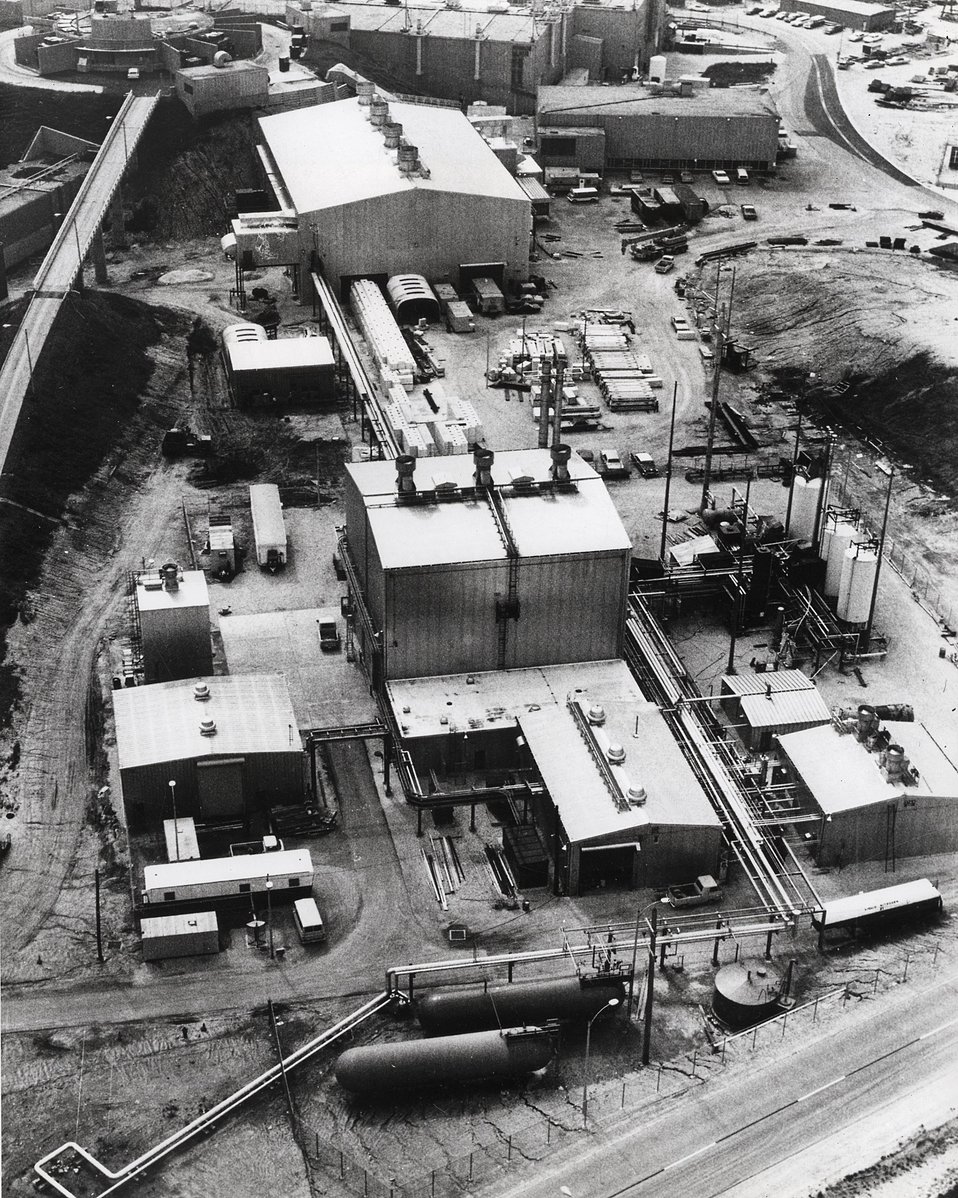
Aerial view of the 12 foot hydrogen bubble chamber facility at Argonne.
c.1970